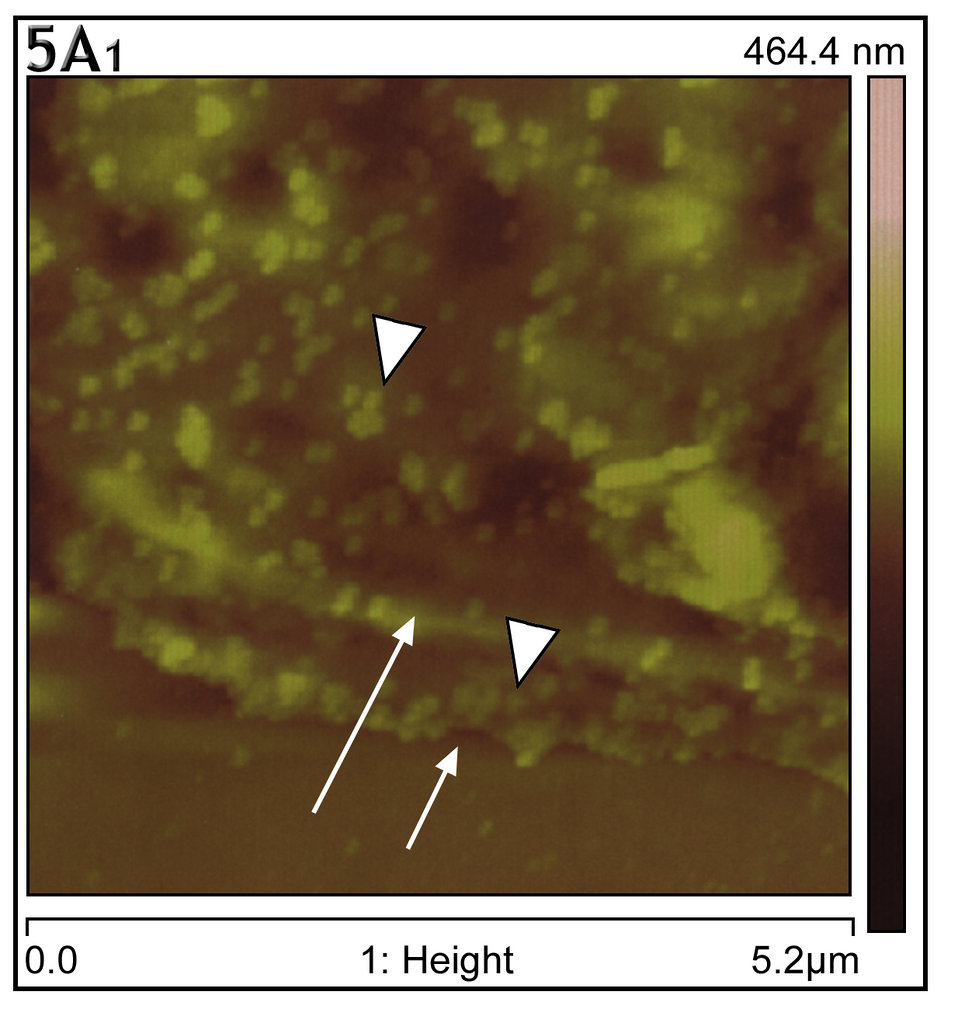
This atomic force microscopy image shows a thickened, layered configuration found at the edge of infected Vero E6 culture cells.